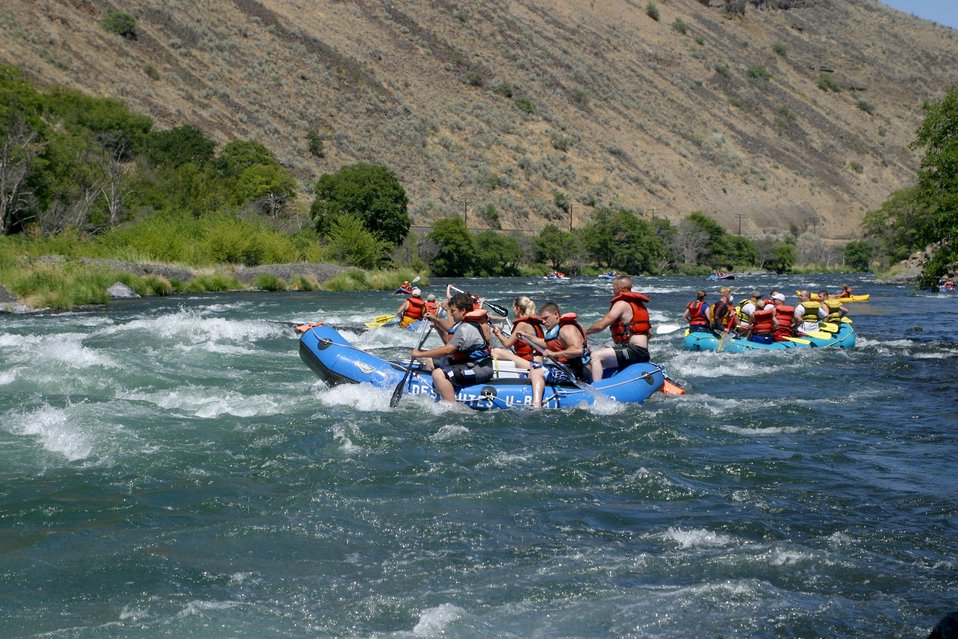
Oak Springs is a Class IV Rapids. The left channel has shallow rocks, large standing waves, turbulent currents and a large hole during high flows. The right channel has a large hole, shallow rocks, and turbulent currents. 7/26/03 Pelton Dam 3600 cfs: Moody Rapids 4300 cfs.